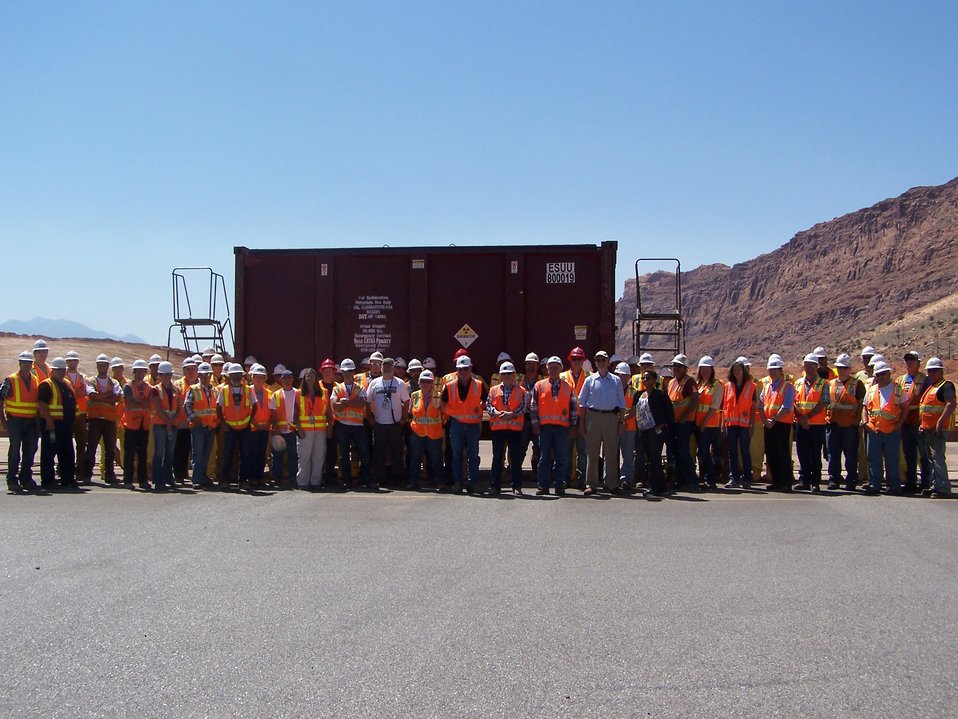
Huizenga Visit to Moab

Senior Advisor for Environmental Management David Huizenga visited the Moab site during June 2012.